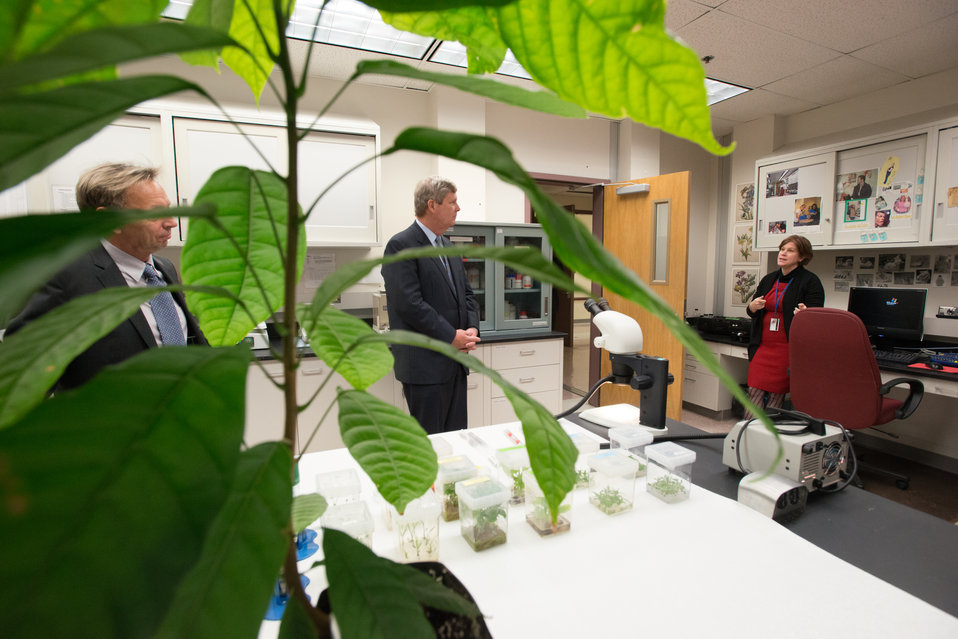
U.S. Department of Agriculture (USDA) Agriculture Research Service (ARS) National Center for Genetic Resources Preservation (NCGRP), Plant Germplasm Preservation Research Lead Scientist Dr. Christina Walters discusses the work being done at the center to Agriculture Secretary Tom Vilsack during the Secretary’s visit to the center in Ft. Collins, CO on Wednesday, Nov. 6, 2013. NCGRP is the largest agricultural gene bank facility in the U.S. The NCGRP staff conducts groundbreaking research to develop more efficient and effective means for preserving plant and animal germplasm, and for better understanding the genetic structure of these invaluable materials. The research findings, preservation techniques, and specialized technology developed by the NCGRP have been adopted by gene banks around the world: many international scientists travel to the NCGRP for research and training.